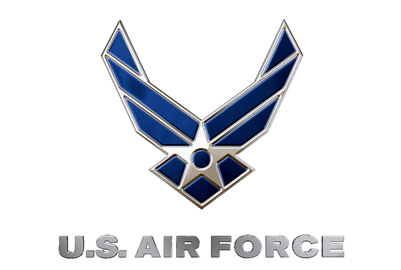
'Aim High ... Fly-Fight-Win' to be Air Force motto